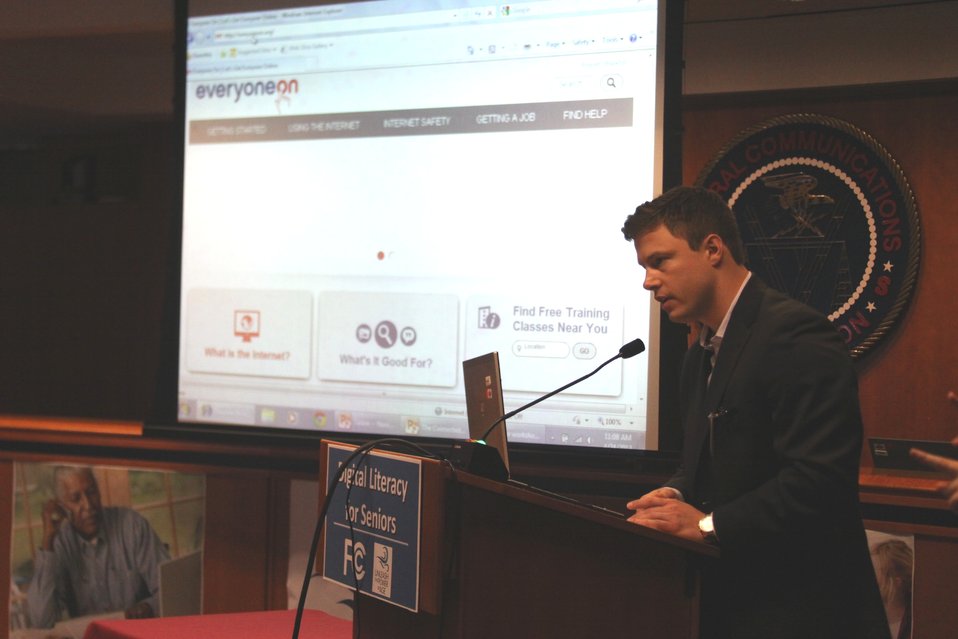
Zach Leverenz, EveryoneOn powered by Connect2Compete: Digital Literacy for Seniors: How the Internet Can Benefit Older Americans, April 24, 2013